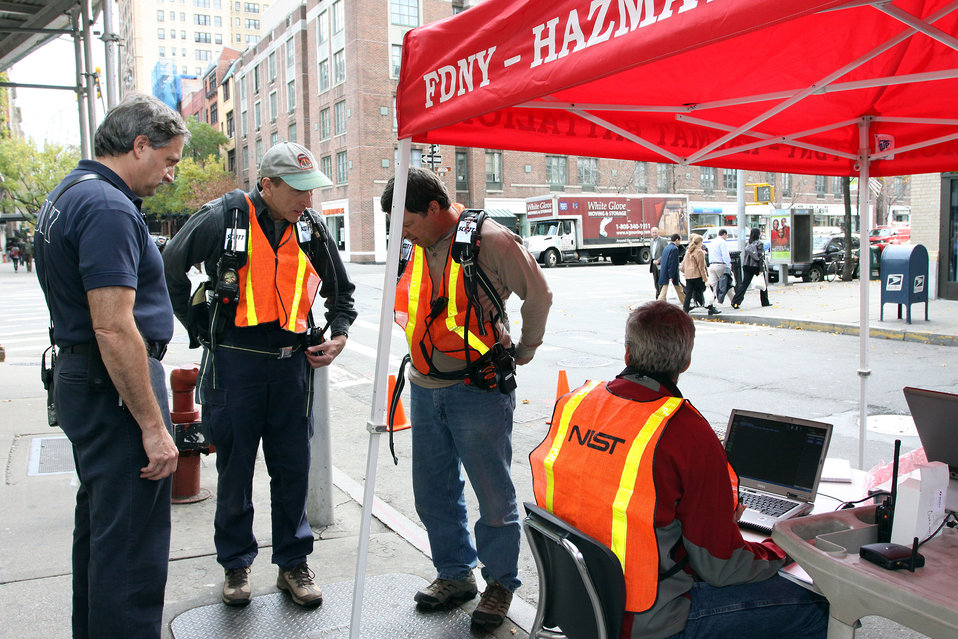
Emergency Radio Transmissions

George Grammas (on left) of the Fire Department of New York, and NIST's Galen Koepke, Dennis Camell, and Bill Young, at the command post outside the West 4th Street subway station.